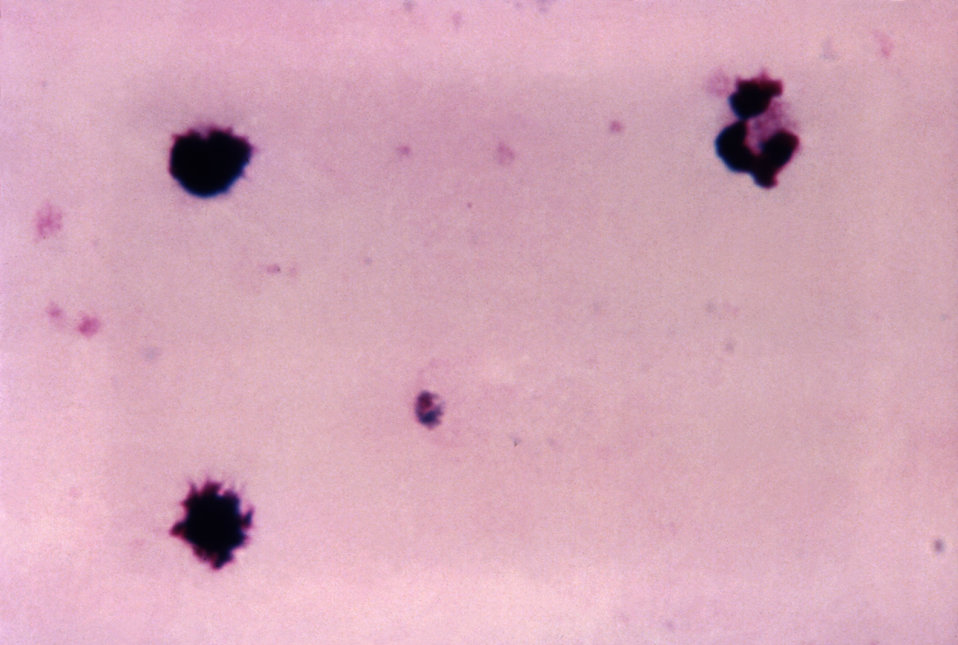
This thick film Giemsa stained micrograph depicts a growing Plasmodium ovale trophozoite.